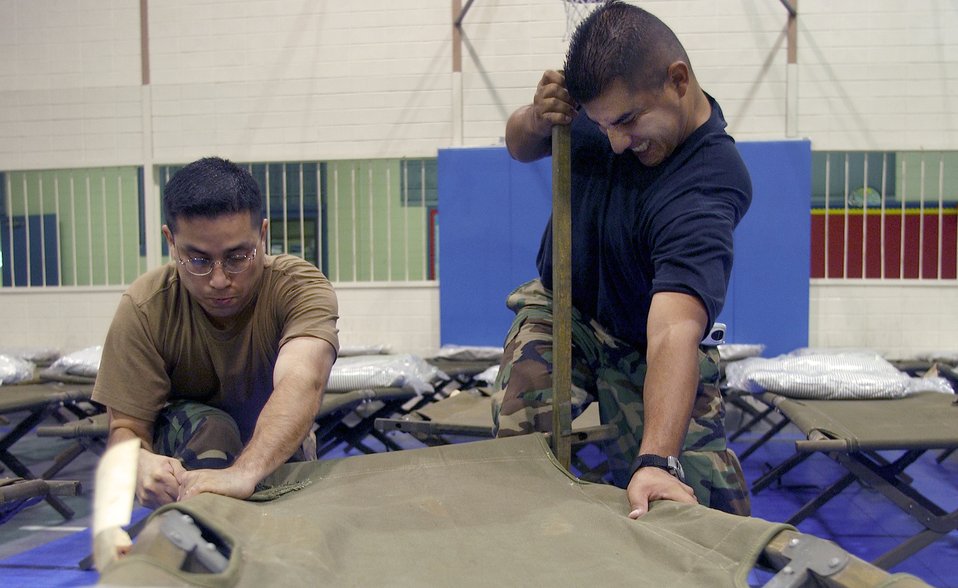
Helping in Abilene

ABILENE, Texas -- Senior Airman Oscar Lamas and Staff Sgt. Jesus Ramirez assemble a cot Sept. 23 at an American Red Cross shelter here. About 100 Airmen from Dyess Air Force Base volunteered to prepare three shelters for more than 450 evacuees seeking refuge from Hurricane Rita.